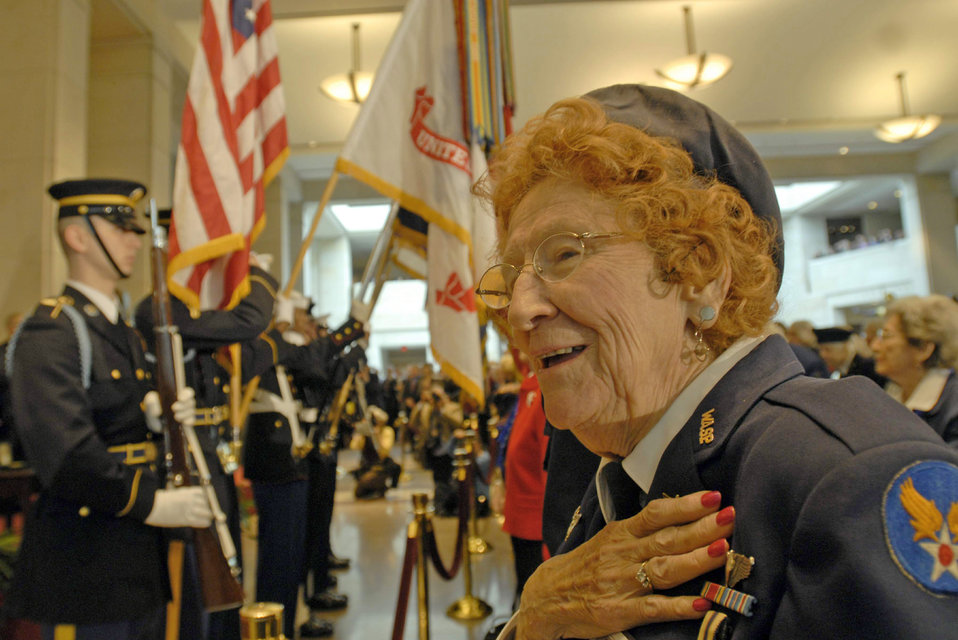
WASPs awarded Congressional Gold Medal

Betty Wall Strohfus, a Women Airforce Service Pilot from Minnesota, sings the